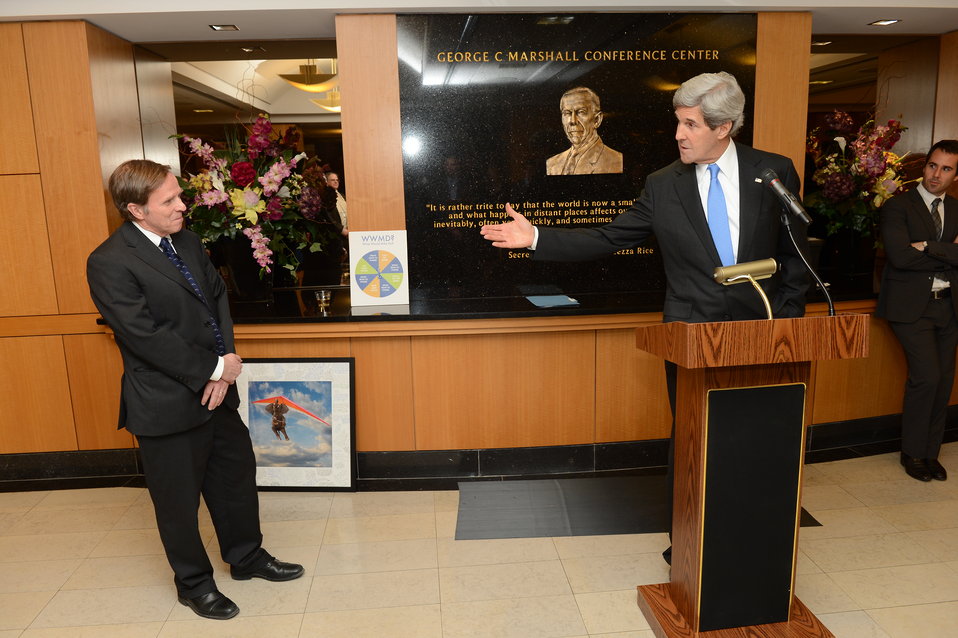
Secretary Kerry Shows His Gratitude to Assistant Secretary Posner

U.S. Secretary of State John Kerry shows his gratitude to Assistant Secretary of State for Democracy, Human Rights, and Labor Michael Posner for his work on behalf of the Department and the United States at the Assistant Secretary's farewell reception at the U.S. Department of State in Washington, D.C., on March 7, 2013.